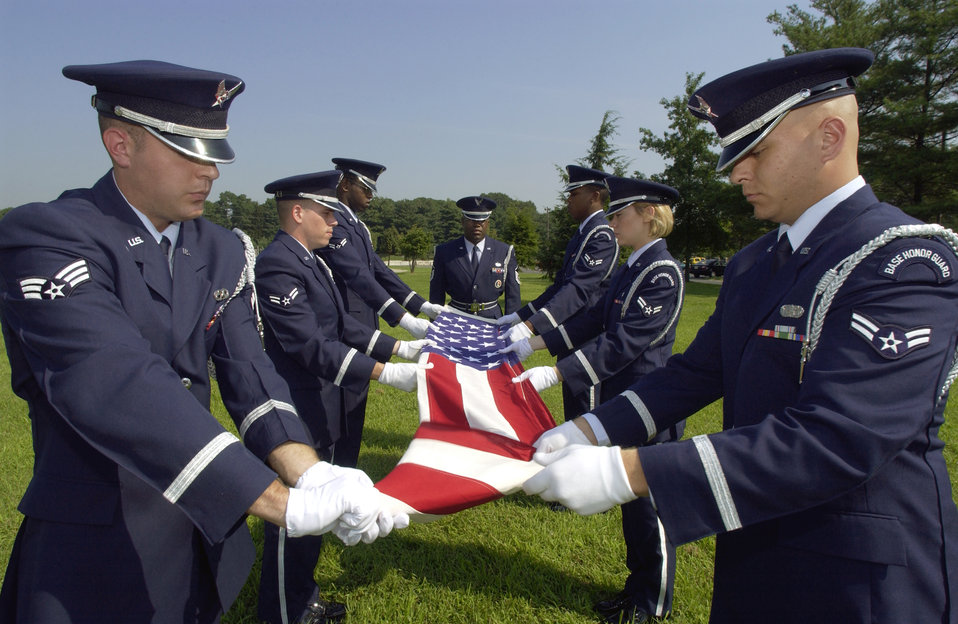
Practice makes perfect

MCGUIRE AIR FORCE BASE, N.J. -- The McGuire AFB Honor Guard carefully folds the U.S. flag during training. The Honor Guard trains eight hours a day for miltary funerals and base functions. The 30-member team covers a four-state region consisting of New York, New Jersey, Connecticut and Pennsylvania.